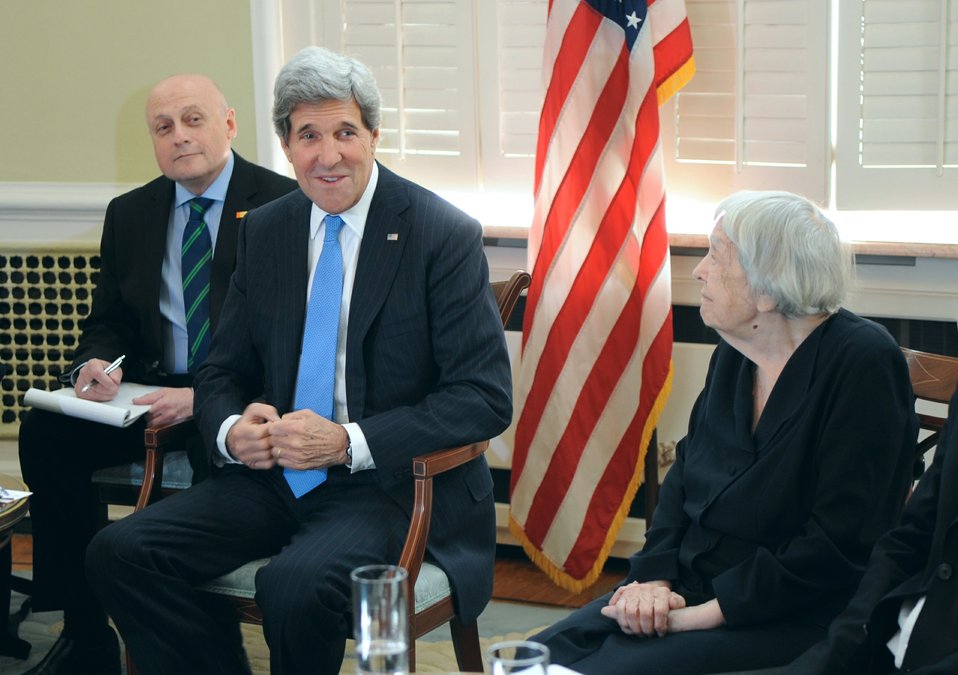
Secretary Kerry Meets With Russian Civil Society

U.S. Secretary of State John Kerry meets with representatives of Russian civil society during a meeting at the U.S. ambassador's residence, the Spaso House, in Moscow, Russia, on May 8, 2013.